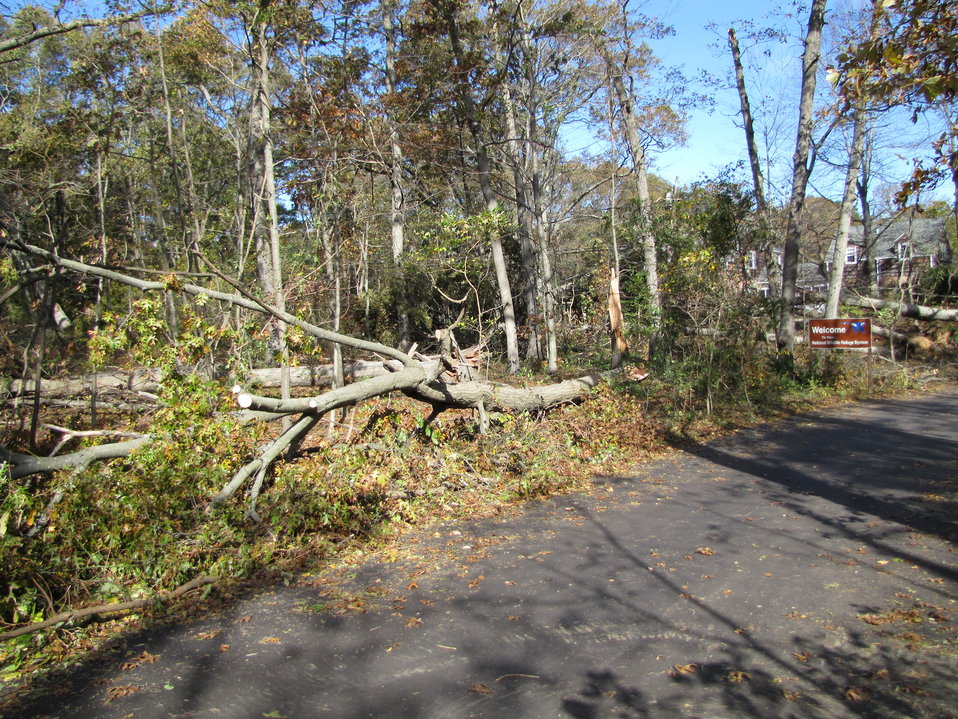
Fallen trees at Target Rock National Wildlife Refuge

These damages were caused by Hurricane Sandy.